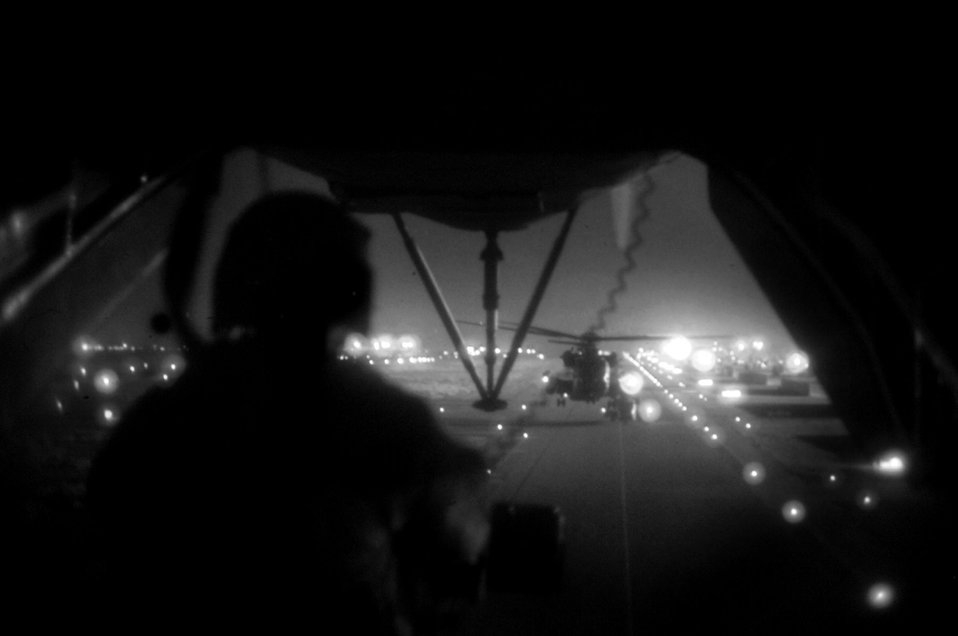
Helicopter retires after service in Vietnam, Iraq

Airmen of the Combined Joint Special Operations Air Command fly in MH-53 Pave Low tail number 68-10357 in March at an undisclosed location in Iraq. The mission for the helicopter crew was to obtain certain persons of interest involved in criminal activity, including terrorism, in Iraq. The MH-53 was retired after 38 years of service, including combat operations in Vietnam.